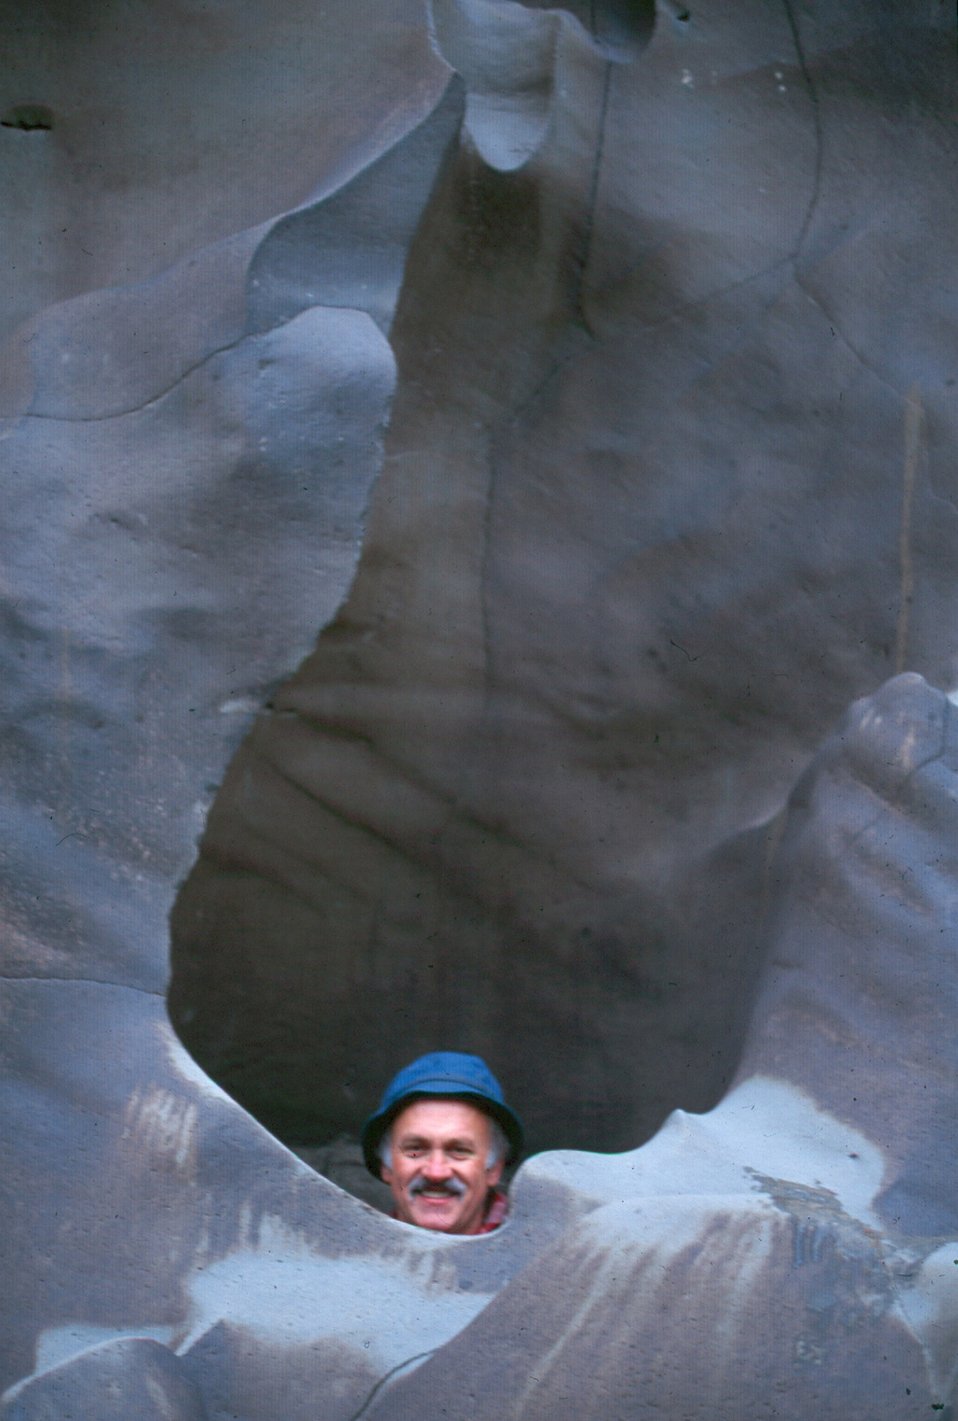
Large cylindrical Shoshone Field Office USRD Upper Snake River District